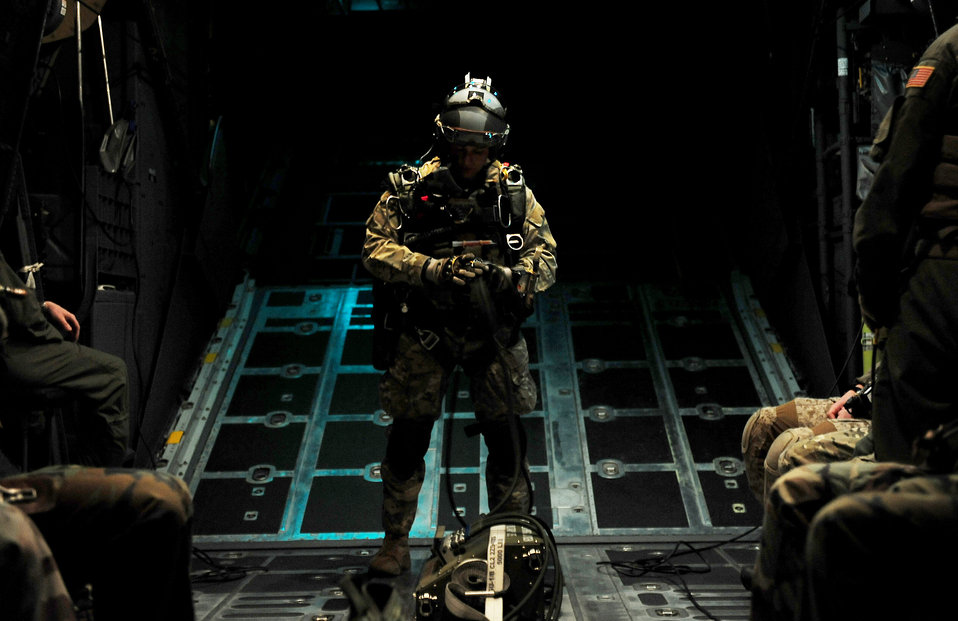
Special Tactics Airmen jump at night

Airmen of the U.S. Air Force Special Tactics Training Squadron prepare to conduct a high altitude, low opening or HALO, mission near Fort Walton Beach, Fla., March 16, 2010, during Exercise Emerald Warrior 2010. U.S. military servicemembers participated in the U.S. Special Operations Command-sponsored, 19-day joint training exercise at multiple sites along Florida's Gulf Coast.